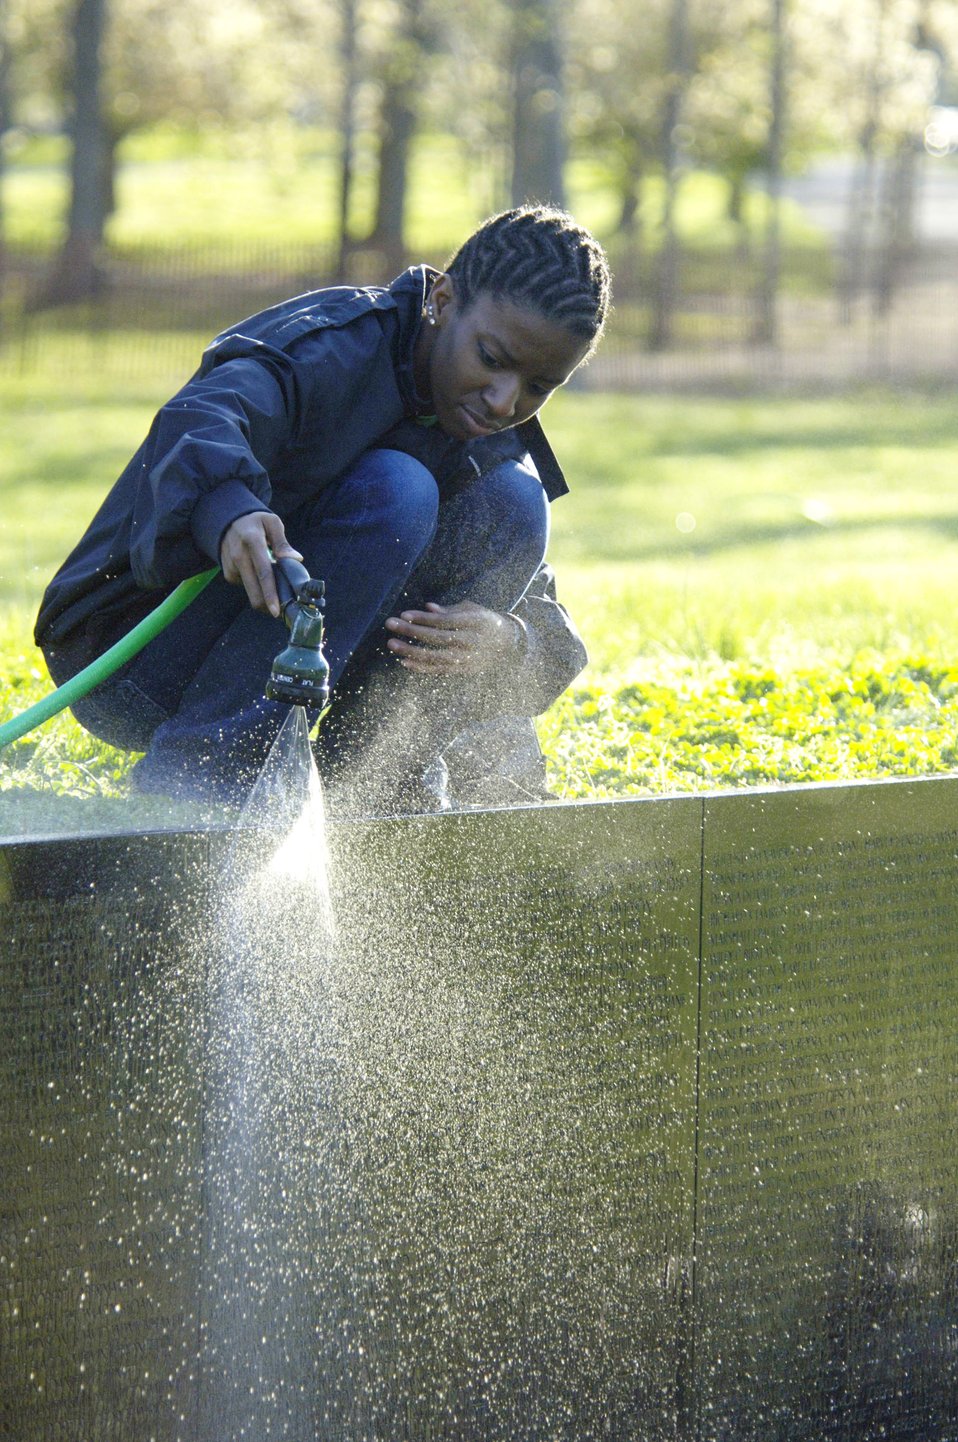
Cleaning the Wall

A volunteer cleans the Vietnam Veterans Memorial April 21 in Washington, D.C. Members of the Air Force Sergeants Association, with volunteers from Charleston, Shaw, Pope, Seymour Johnson, Langley and Bolling Air Force Bases, were among those who participated in the event.